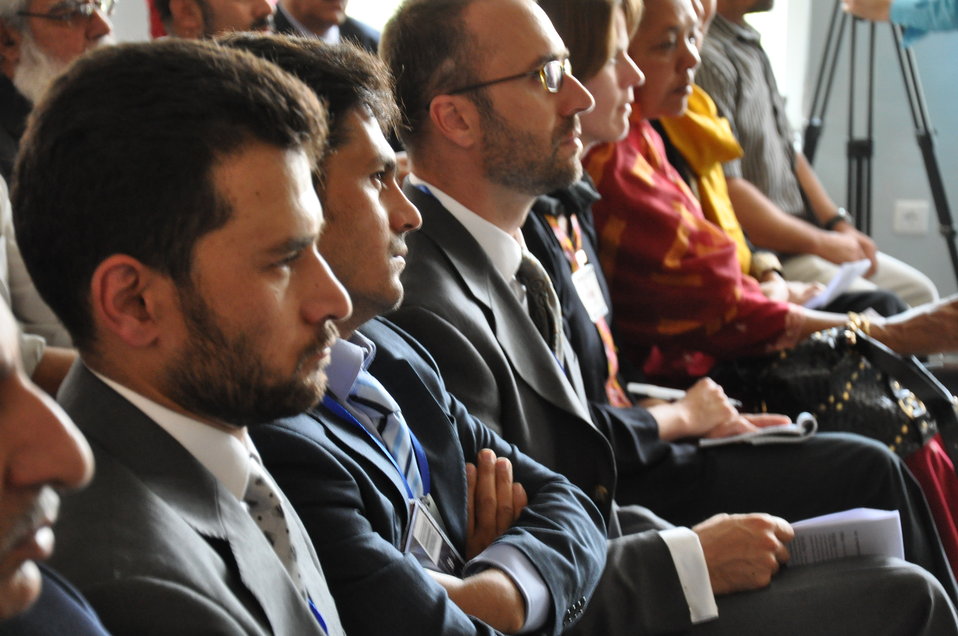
Kabul University Herbarium